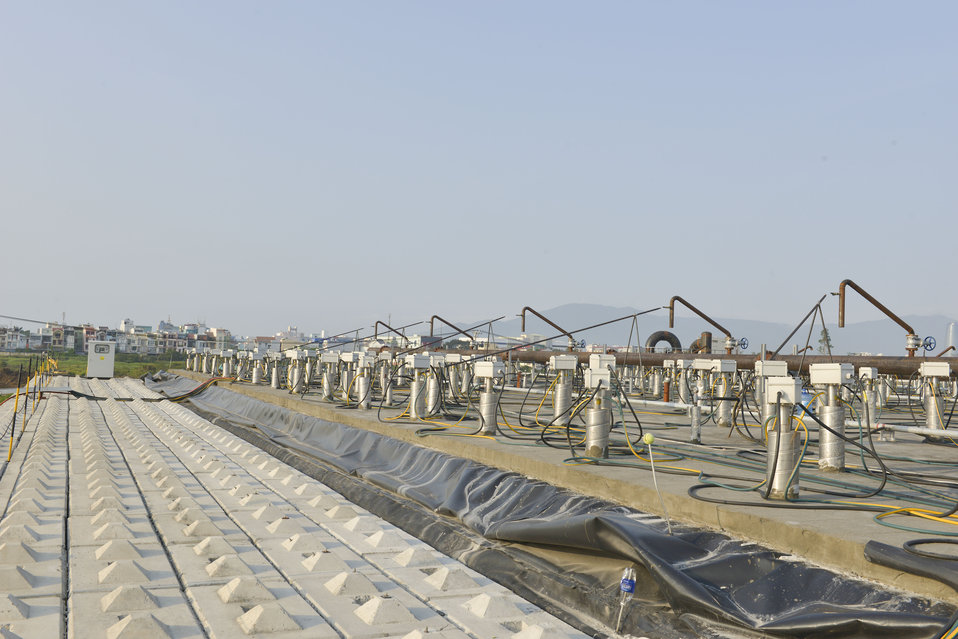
The containment and treatment structure at the Danang Airport Project site.

Heating elements have been installed into the heater wells that are drilled throughout the containment structure, and power cables have been installed to connect the treatment system to the electrical substations adjacent to the containment structure.

March 24, 2014.